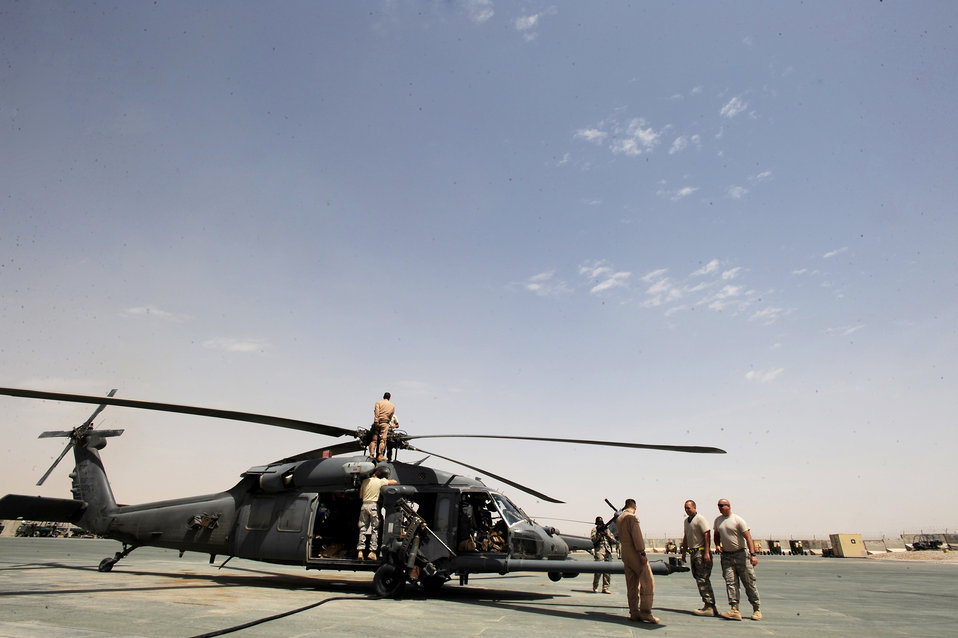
Maintenance Airmen ensure rescue missions save lives

Aircraft maintenance Airmen assigned to the 451st Expeditionary Aircraft Maintenance Squadron helicopter maintenance unit and an HH-60 Pave Hawk flight engineer assigned to the 41st Expeditionary Rescue Squadron perform minor maintenance on a Pave Hawk after the aircrew returned from a medical-evacuation mission April 16, 2010, at Camp Bastion, Afghanistan.